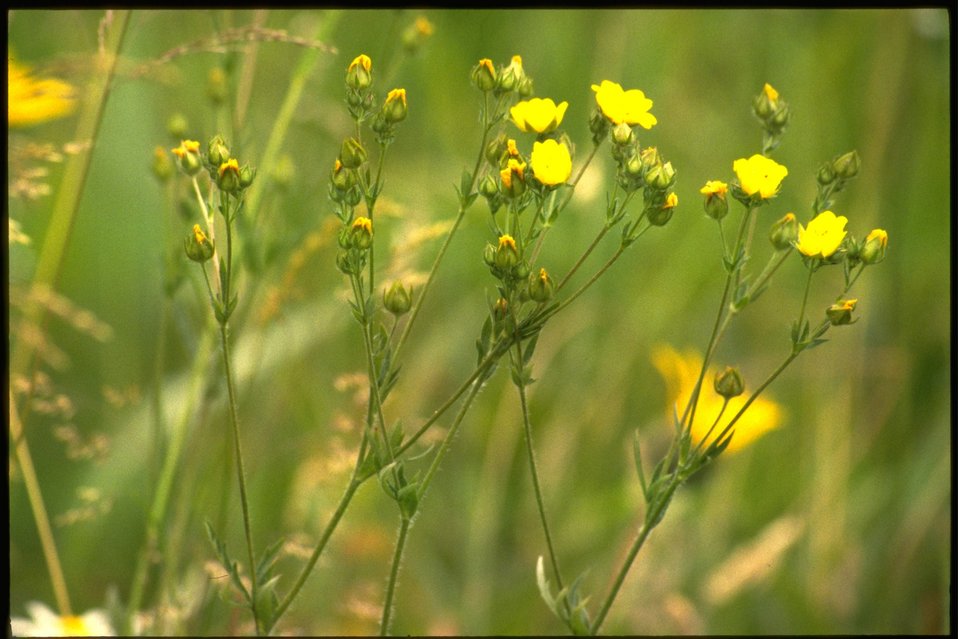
Medium shot of Potentilla.